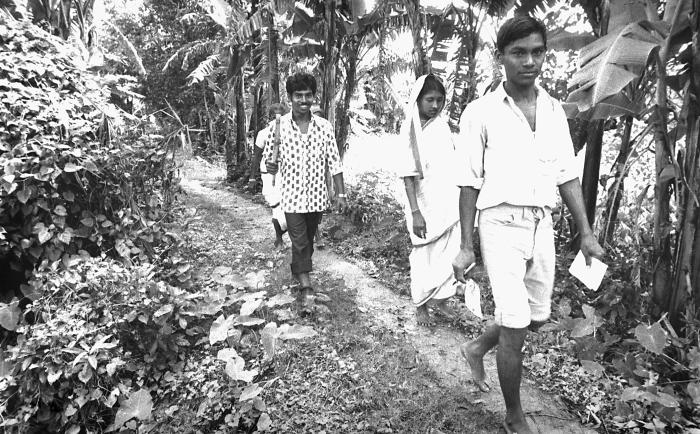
These Bangladesh residents, who were also local eradication team volunteers, were walking along a trail, going from house to house in search of any possible smallpox cases, or residents who knew of the existence of any potential cases. Once a case was discovered, and was confirmed by an on-site eradication team epidemiologist, the name was entered into the 'Containment Book'. The Containment Book was a ledger, which recorded all of the names of anyone living in, or within one half of a mile from a smallpox case, and subsequently all those listed were vaccinated against smallpox. Those vaccinated were followed until a 'successful' vaccination was observed. Periodic surveys showed that by the end of the program, 80% of the public knew about the cash award presented to those who had informed the public health authorities of a confirmed smallpox case.